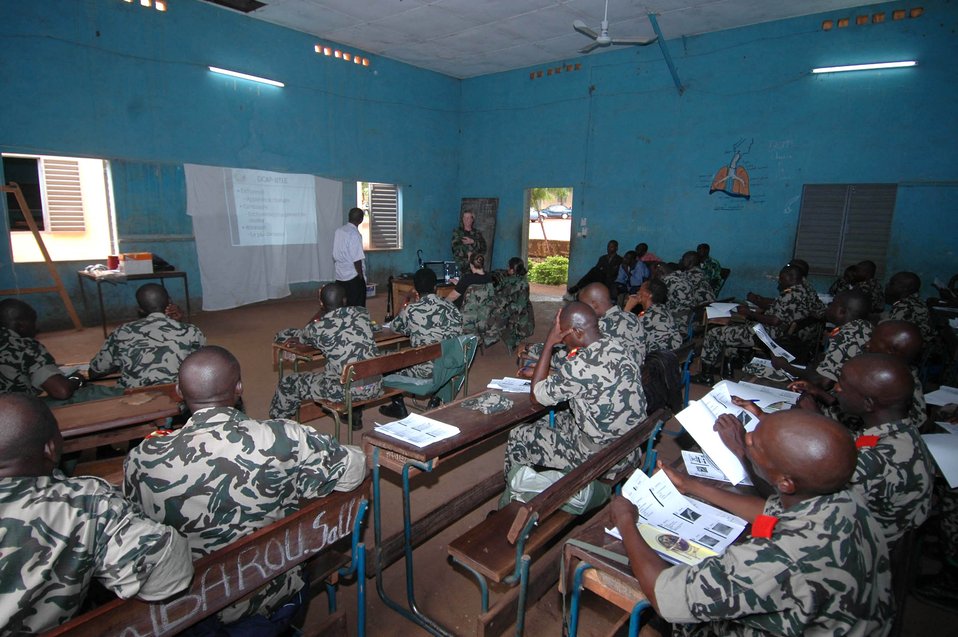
Malians learn life-saving techniques

Staff Sgt. Churyl Liston teaches Malian medics and nurses how to handle a mass casualty accident, July 15 in the village of Kati. More than 90 servicemembers deployed to Mali for MEDFLAG 08, a multi-national medical training exercise designed to enhance medical capabilities and readiness for U.S. and African forces. Sergeant Liston is a medical technician assigned to the 31st Medical Group, Aviano Air Base, Italy.